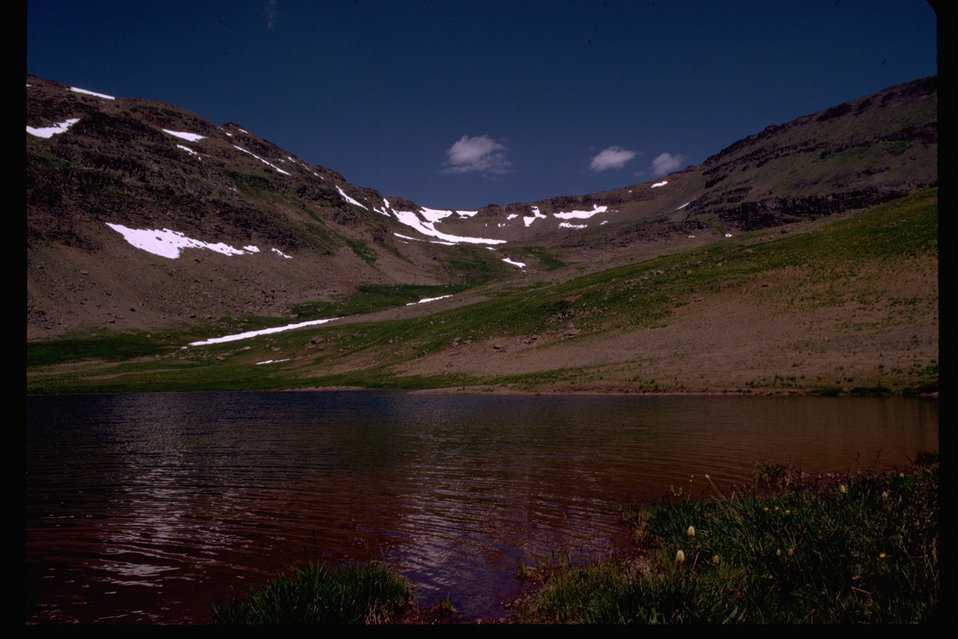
Wild Horse Lake from the southeast shore.